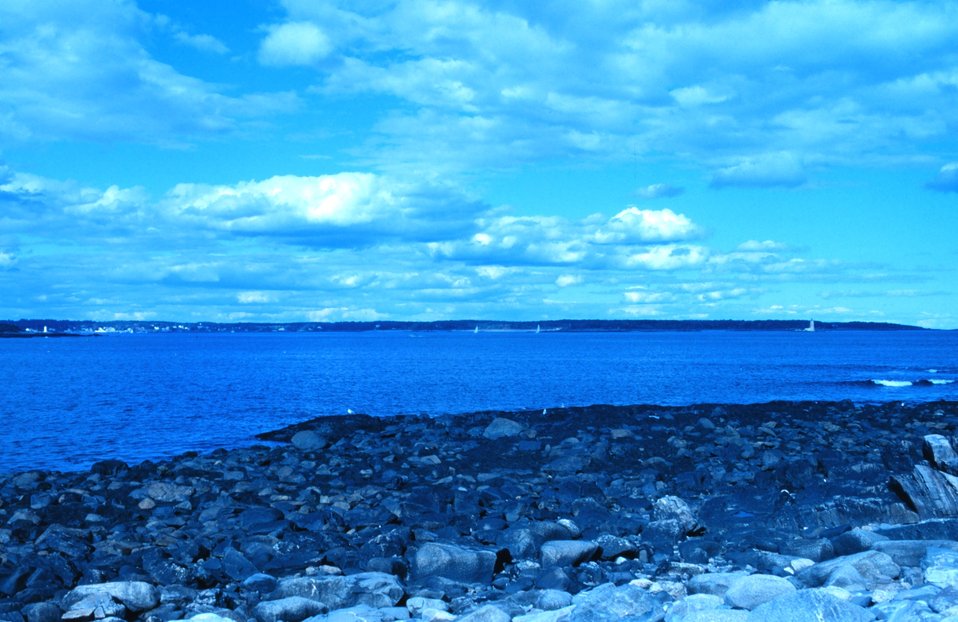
Newcastle Light visible across the bay.